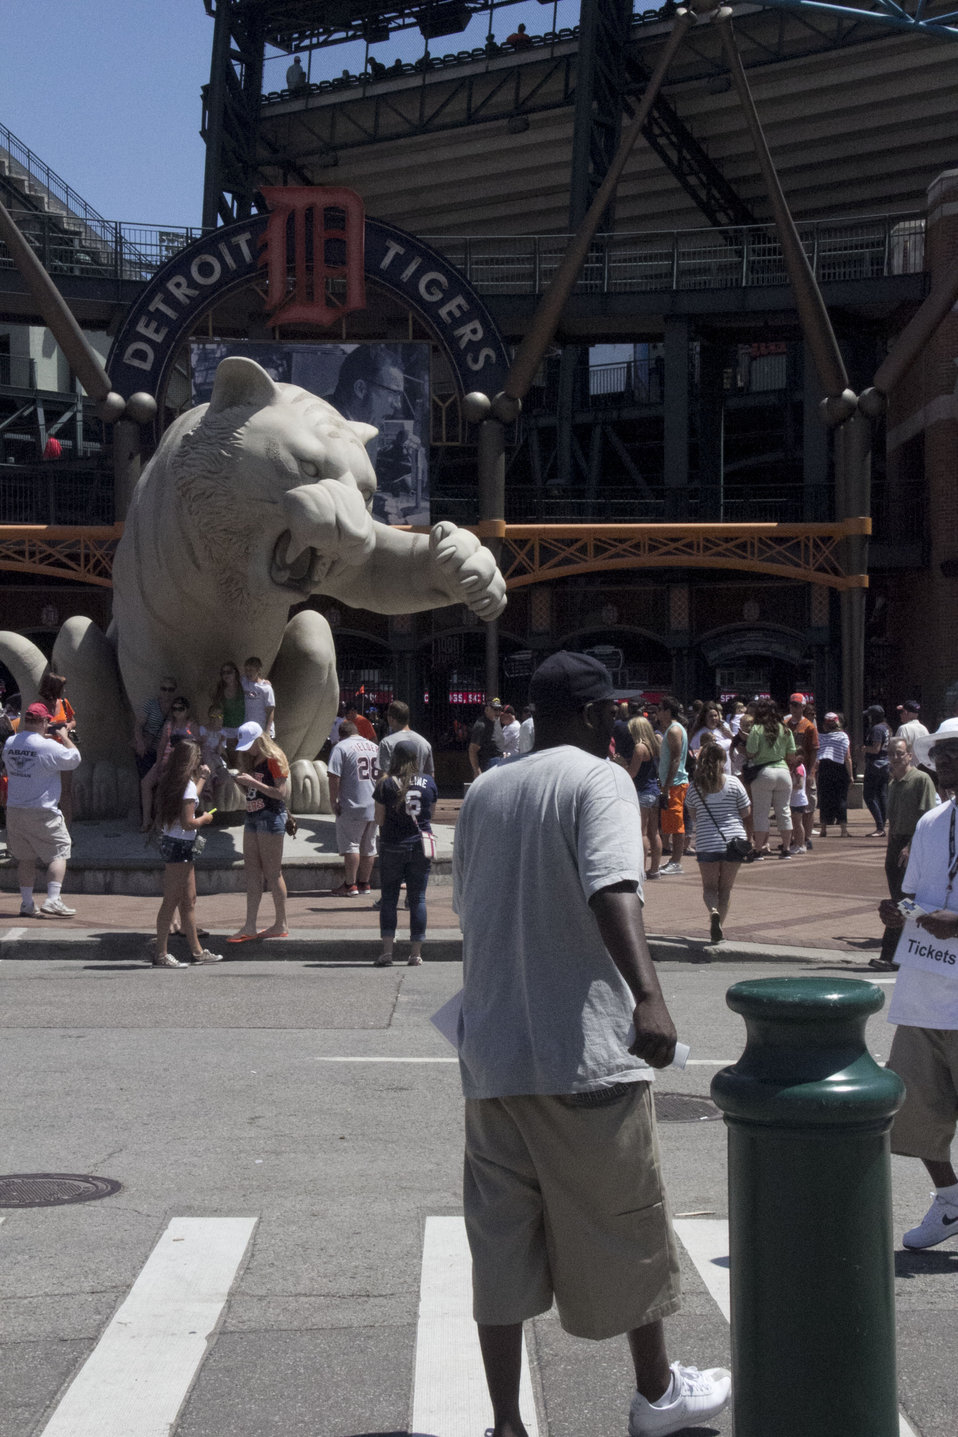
Tiger Statue